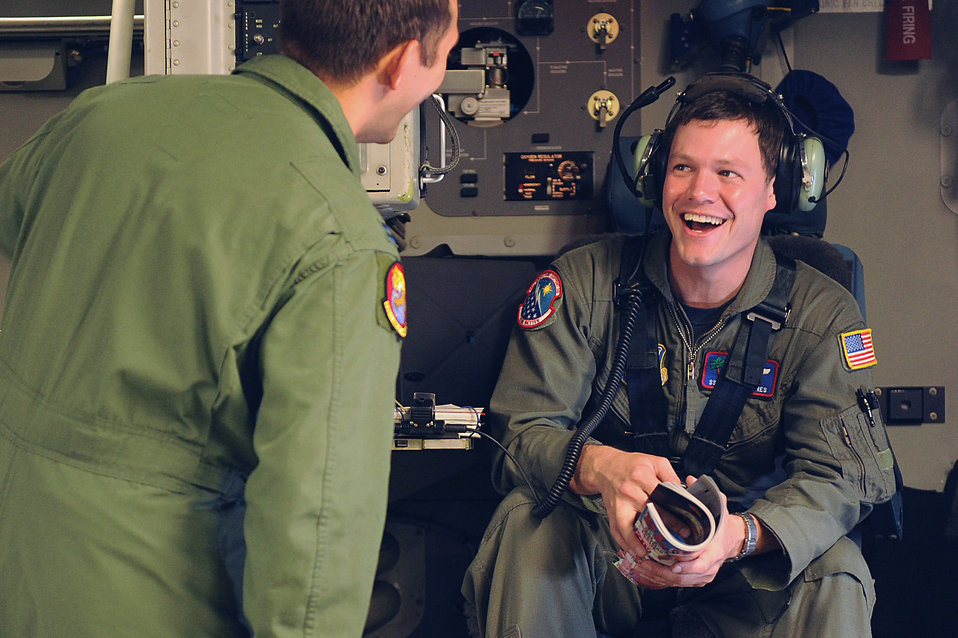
Hickam aircrew

Capt. Nathan Padgett and Staff Sgt. Jason Jones, both of the 535th Airlift Squadron, have a moment of levity prior to a training mission Nov. 13, 2010, at Joint Base Lewis-McChord, Wash. A C-17 Globemaster III aircrew from the 535th AS trained in unrestricted-descent assault landings, airdrop, combat offloads, air refueling, night-vision-goggle training, low levels, mountainous terrain, assault landings, threat responses and multiple-ship formation training.